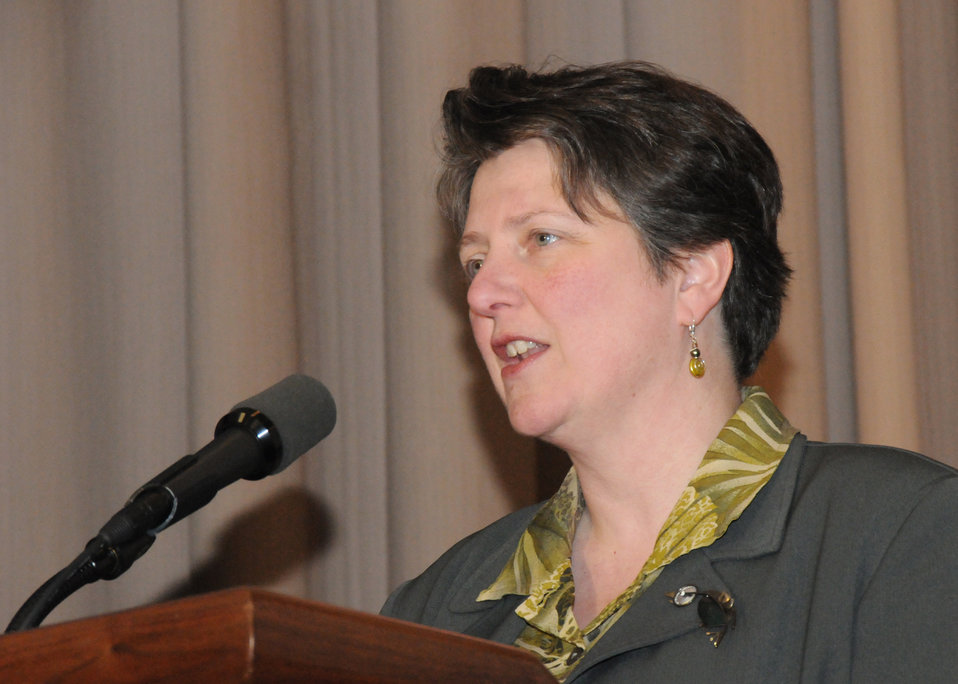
Agriculture Deputy Secretary Kathleen Merrigan welcomed guests and panelists at the Women and Working Lands: Past, Present, Future conference held in the Jefferson Auditorium at the Department of Agriculture in Washington, D. C., on Thursday, Mar. 25, 2010. USDA photo 10di1283-61